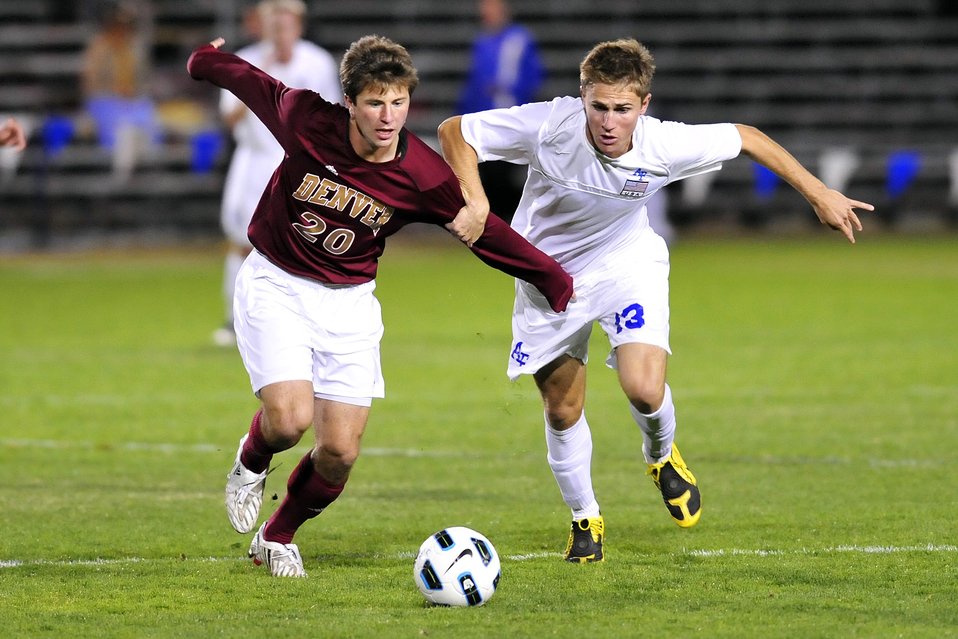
Outta my way!

Falcons sophomore Kevin Durr (right) fights for control of the ball with Pioneer Matt Kirby during the game against the University of Denver Oct. 2, 2010, at the U.S. Air Force Academy's Soccer Stadium in Colorado Springs, Colo. The Falcons lost 5-1 to the Pioneers.